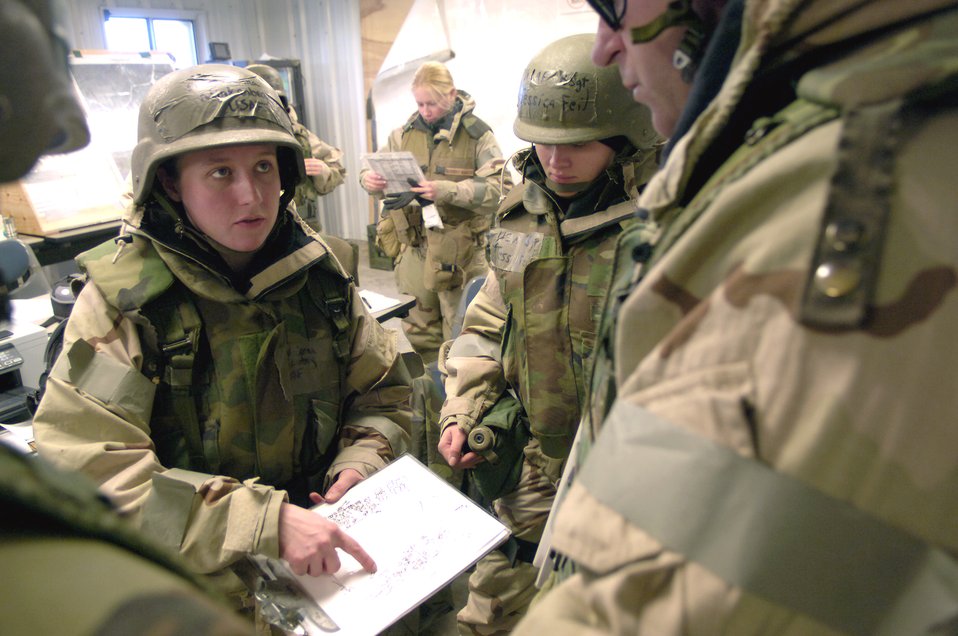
Readiness troops train for the future

Staff Sergeant Jenna Klinkenberg briefs fellow readiness Airmen on the information obtained during a site survey of a potentially contaminated room Nov. 16. The site survey was part of a readiness training exercise at Fort Leonard Wood, Mo. The exercise is designed to give readiness Airmen training scenarios developed from lessons learned during operations Iraqi Freedom and Enduring Freedom. The two-day exercise is the part of a two-week training class here. Sergeant Klinkenberg is with the 3rd Civil Engineer Squadron, Elmendorf Air Force Base, Alaska.